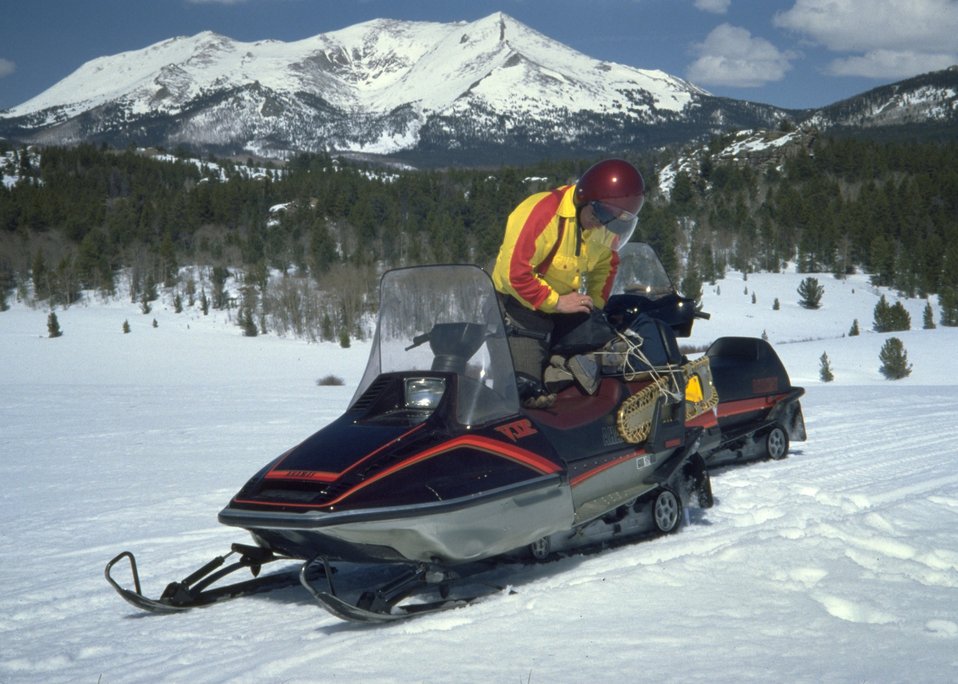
Snowmobiler securing equipment on snowmobile.